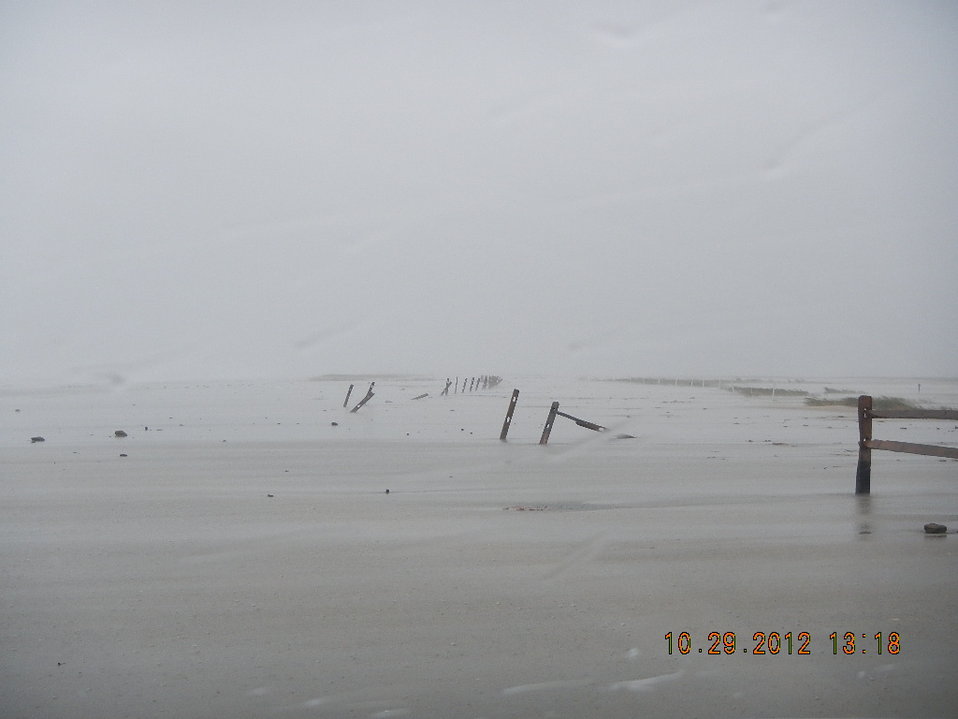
Parking Lot 3 at Chincoteague National Wildlife Refuge (VA)

Parking lot 3 at Chincoteague on Monday afternoon 10/29/12.